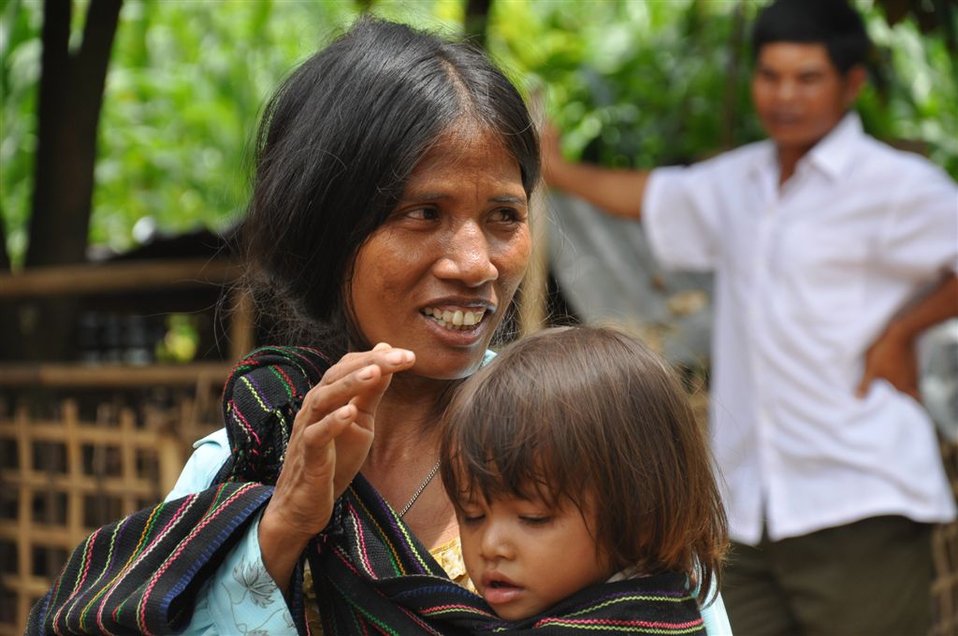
Local populations benefit from new cocoa crop techniques and market access.